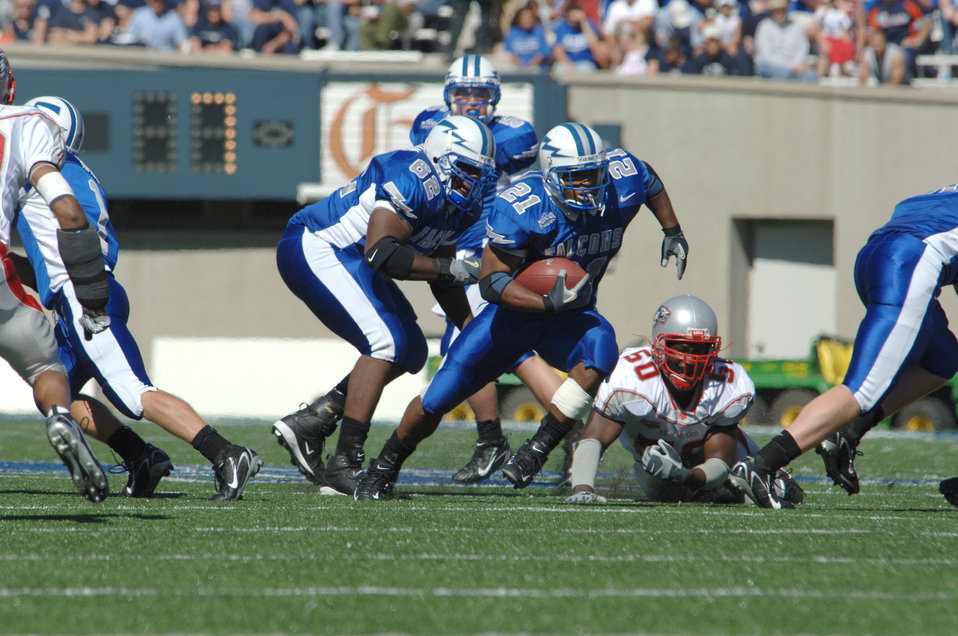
Air Force beats New Mexico 24-7

Air Force fullback Ryan Williams busts into the clear on a run up the middle Sept. 30. The junior fullback anchored the Falcons rushing attack by gaining 94 yards on 22 carries. The Falcons went on to grind out 262 yards rushing in their 24-7 victory over New Mexico. Air Force moves to 2-0 in the Mountain West Conference and 2-1 overall.